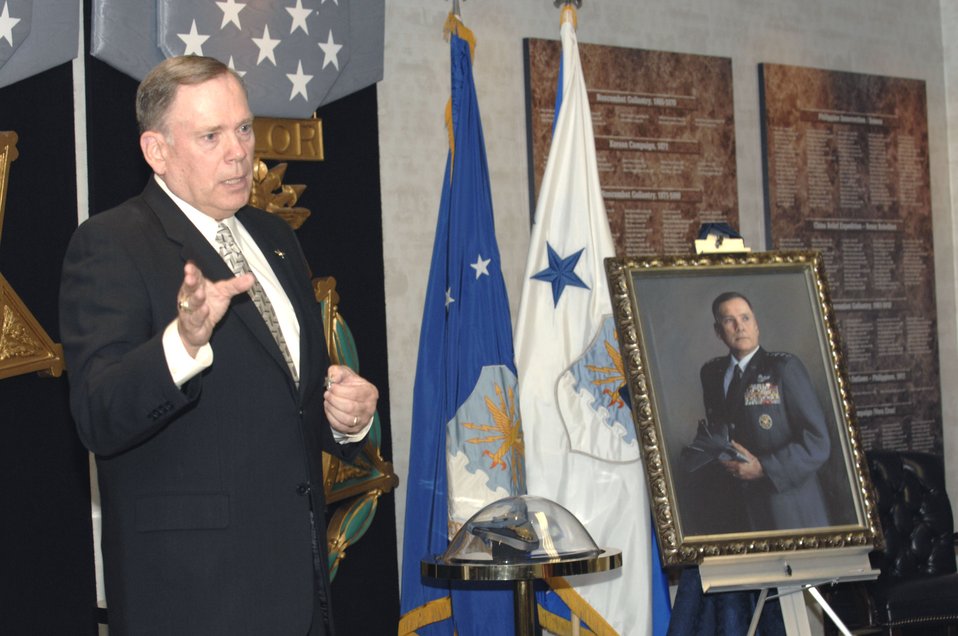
Portrait of General Jumper unveiled

Retired Air Force Chief of Staff Gen. John P. Jumper speaks after having his portrait unveiled in the Hall of Heroes at the Pentagon Oct. 16.